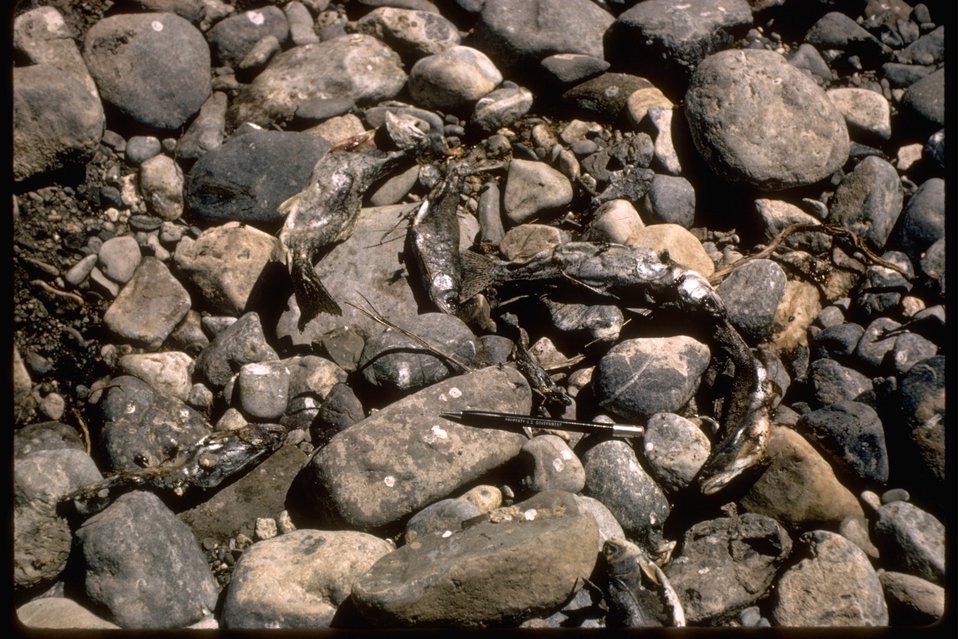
Dead fish blending in with rocks.